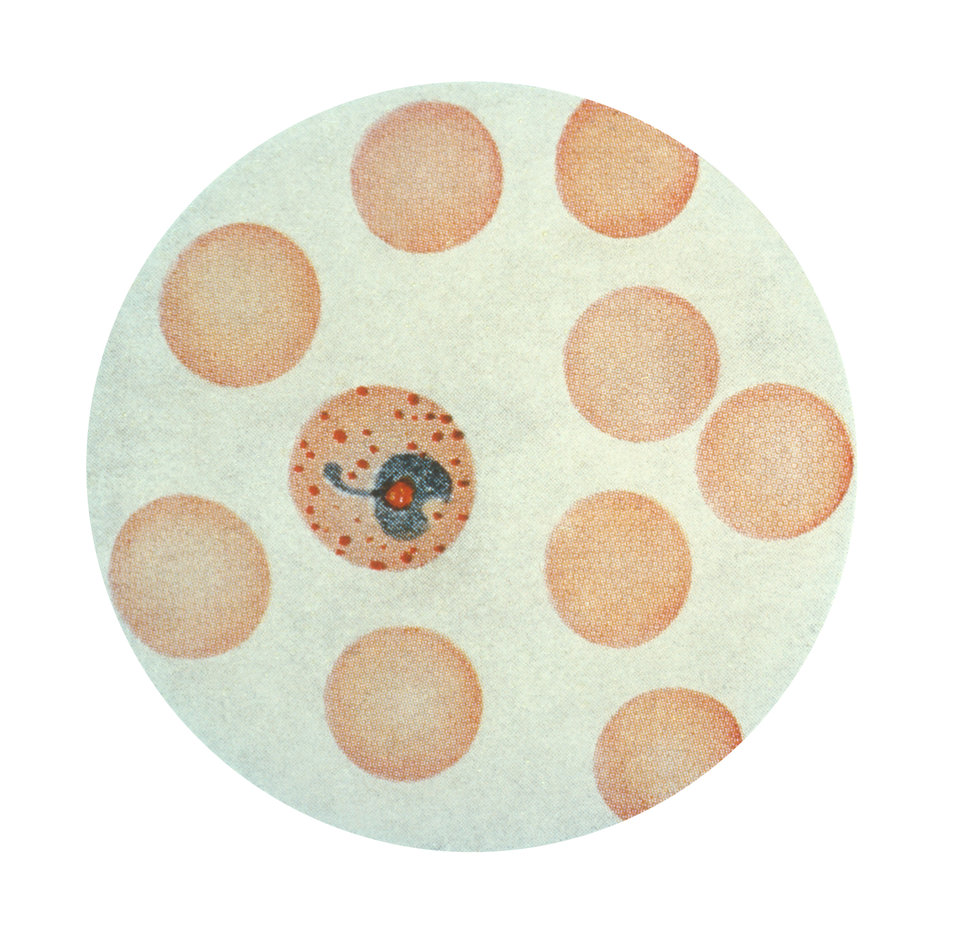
A photomicrograph of Plasmodium vivax in its erythrocytic trophozoite stage, using Wright's stain. x1500.